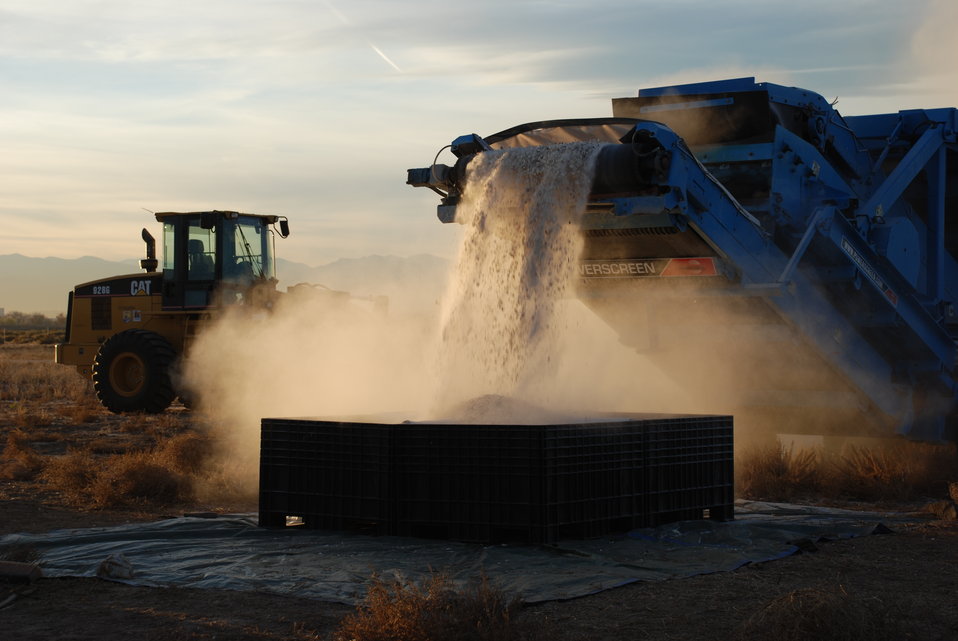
Ivory Crush 2013